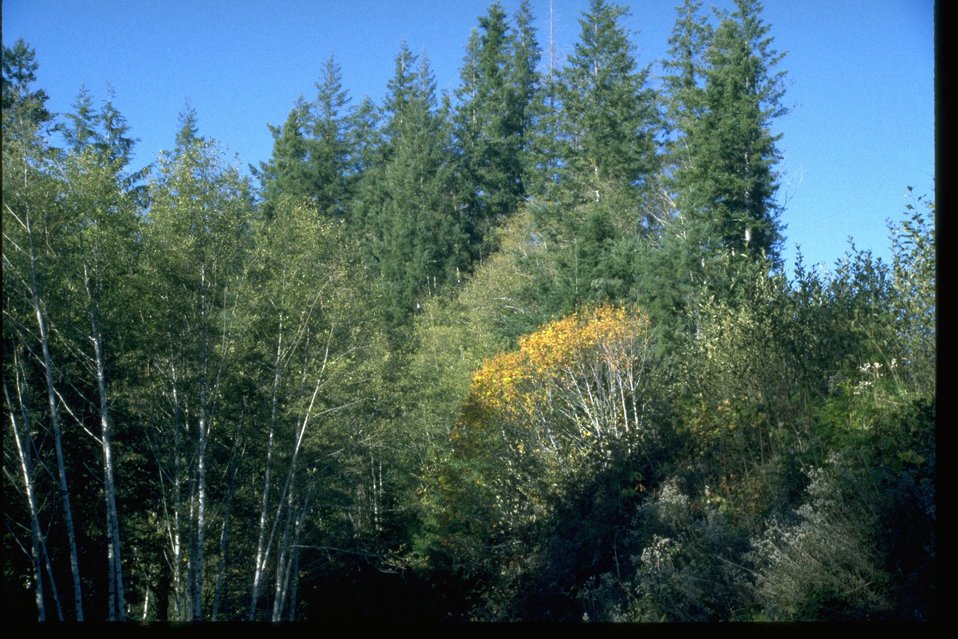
Hardwoods and second growth.